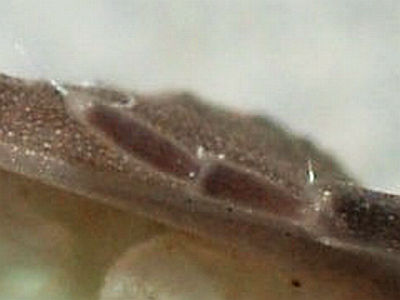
Armadillidium granulatum Brandt, 1833: Detail of antennal flagellum. Français : Armadillidium granulatum, un cloporte commun de méditerranée. Flagelle antennaire. Les cloportes forment un sous-ordre des crustacés isopodes, les Oniscides. Les cloportes du genre Armadillidium sp. ont la possibilité de se rouler en boule, ce qui est à l'origine de leurs noms dans certaines langues, dont l'anglais (par ex. pill bug, litt. bêbête-pilule).